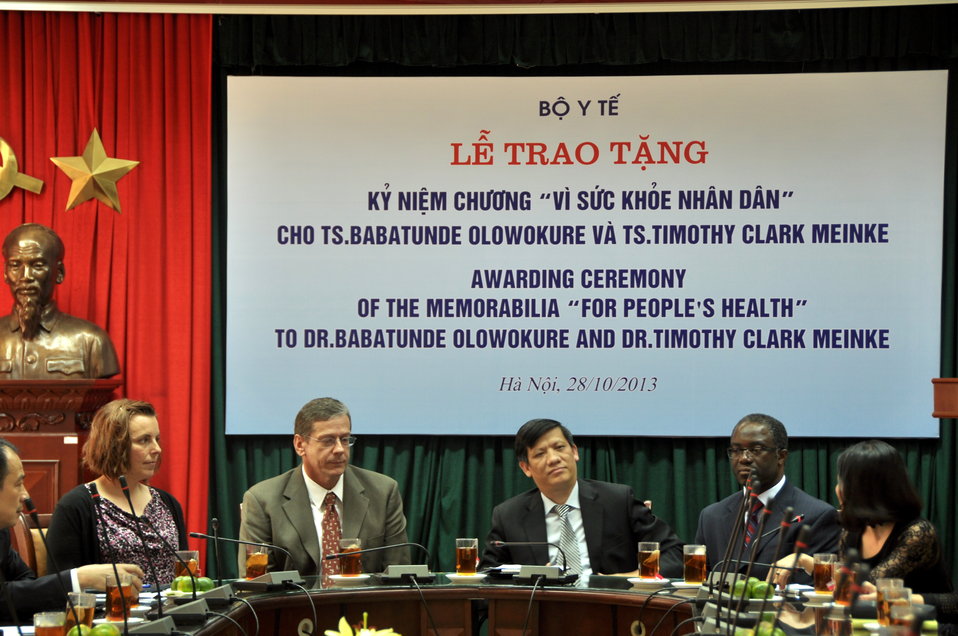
Ministry of Health awards Dr. Timothy Meinke of USAID the ‘Memorabilia for People’s Health’

Hanoi, October 28, 2013.